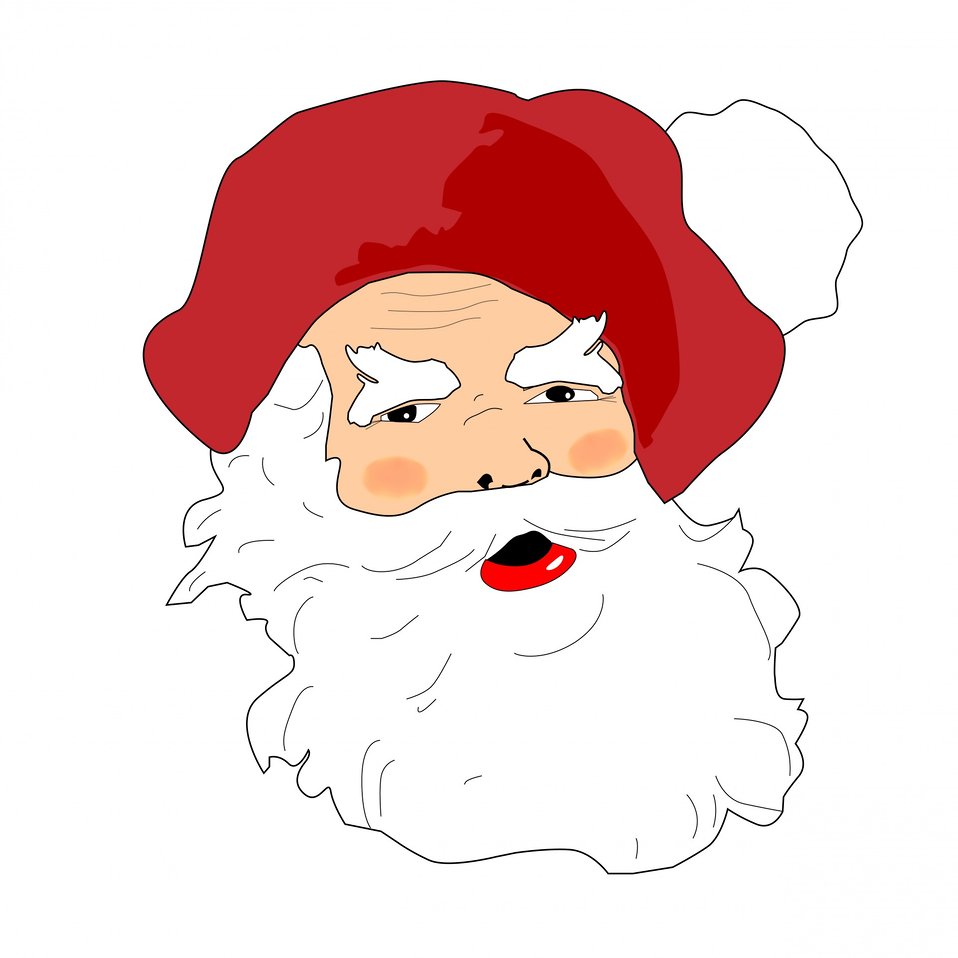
Santa claus christmas face

Vintage style santa claus, father christmas face illustration.